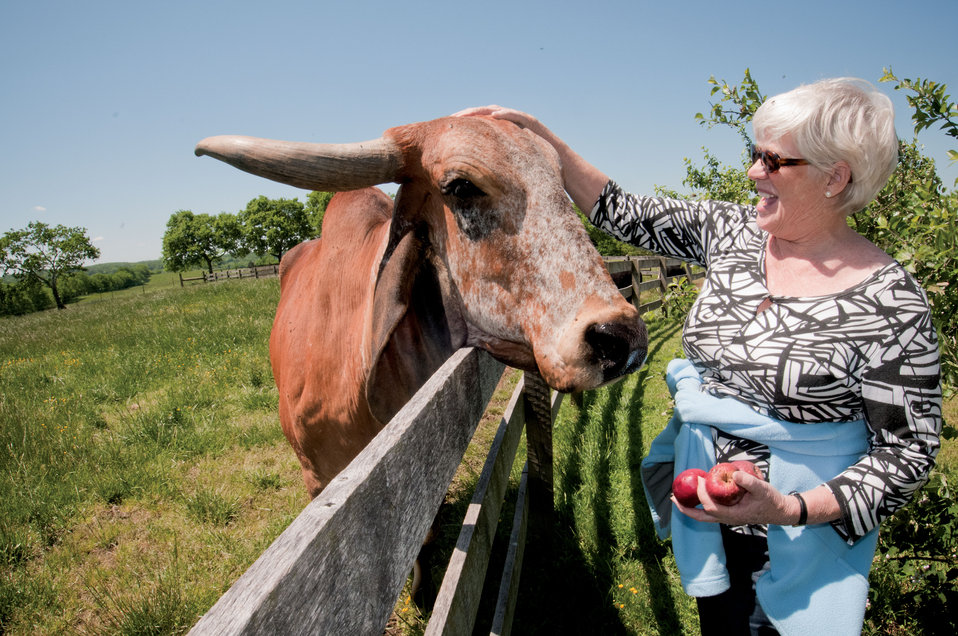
Bunny the Brahma cow is always ready for photos, a scratch on the neck or a juicy apple from Rossie Fisher, co-owner of Brookview Farm in Manakin-Sabot, VA, on Thursday, May 5, 2011.This is one of many farms participating with Fall Line Farms a local food cooperative in the Richmond, VA area that offers a wide variety of household food staples and specialty items on an ever changing inventory of fruits, vegetables, meats, soaps, eggs, cheeses, flowers, honey, pastas, sauces, syrups, baked goods, mushrooms, flour and grains. Suppliers post what they have on a Lulus Local Food online listing and customers can make their selection. Every Thursday suppliers deliver orders to, one of several pick-up points, designated by the customers in or around the Richmond area.